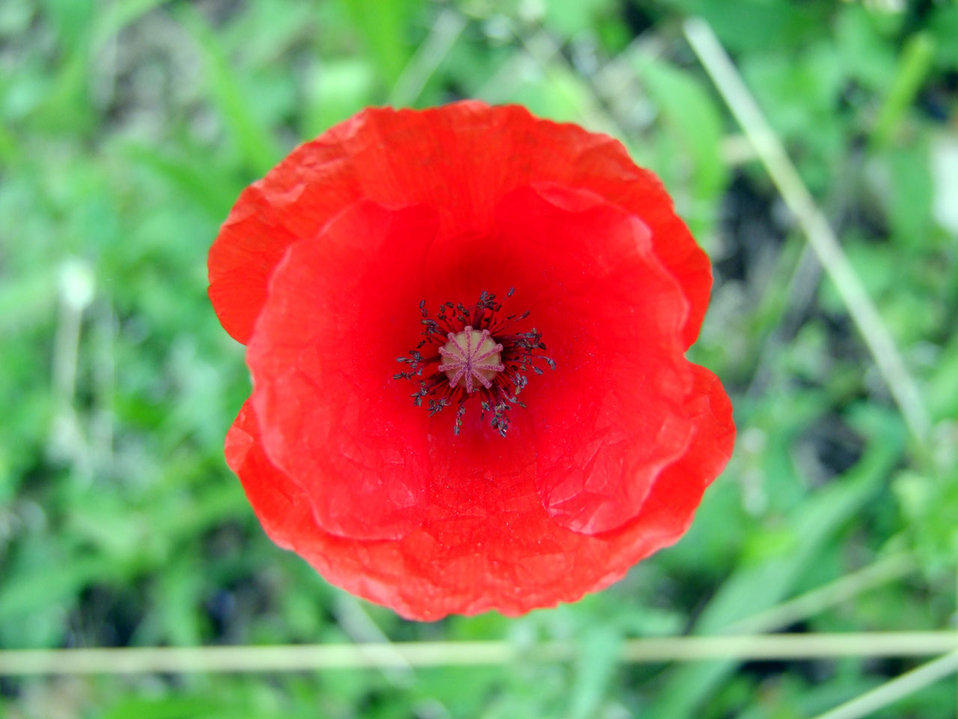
Gypsy dance

Beautifull red rose invited me to dance in the middle of savannah.